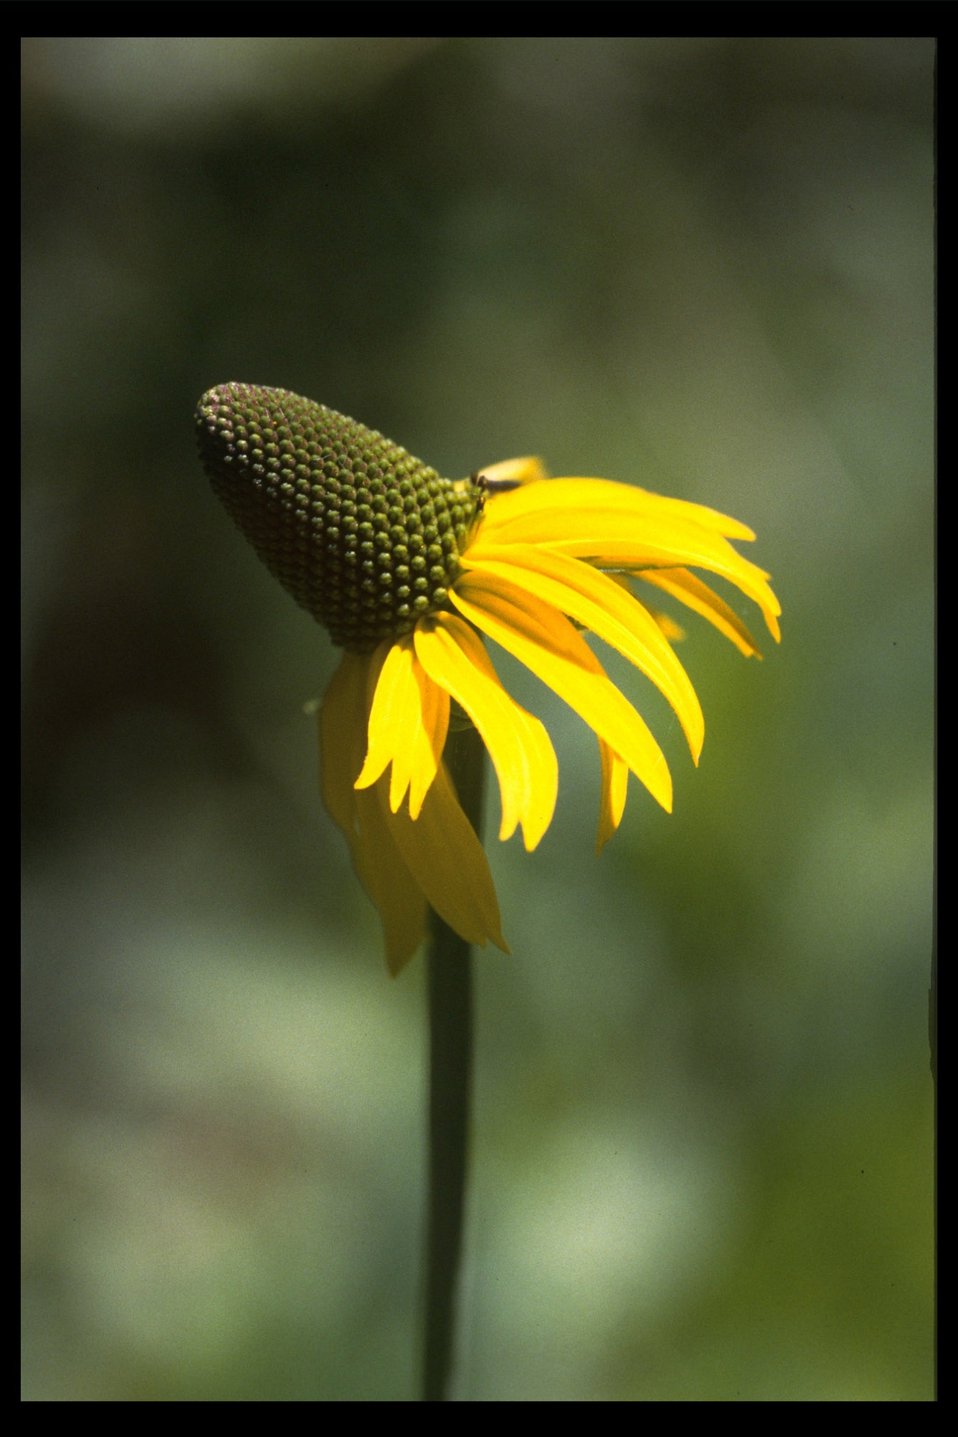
California Cone Flower (Rudbeckia californica) near Goolaway Gap, the head of West Fork Evans Creek.